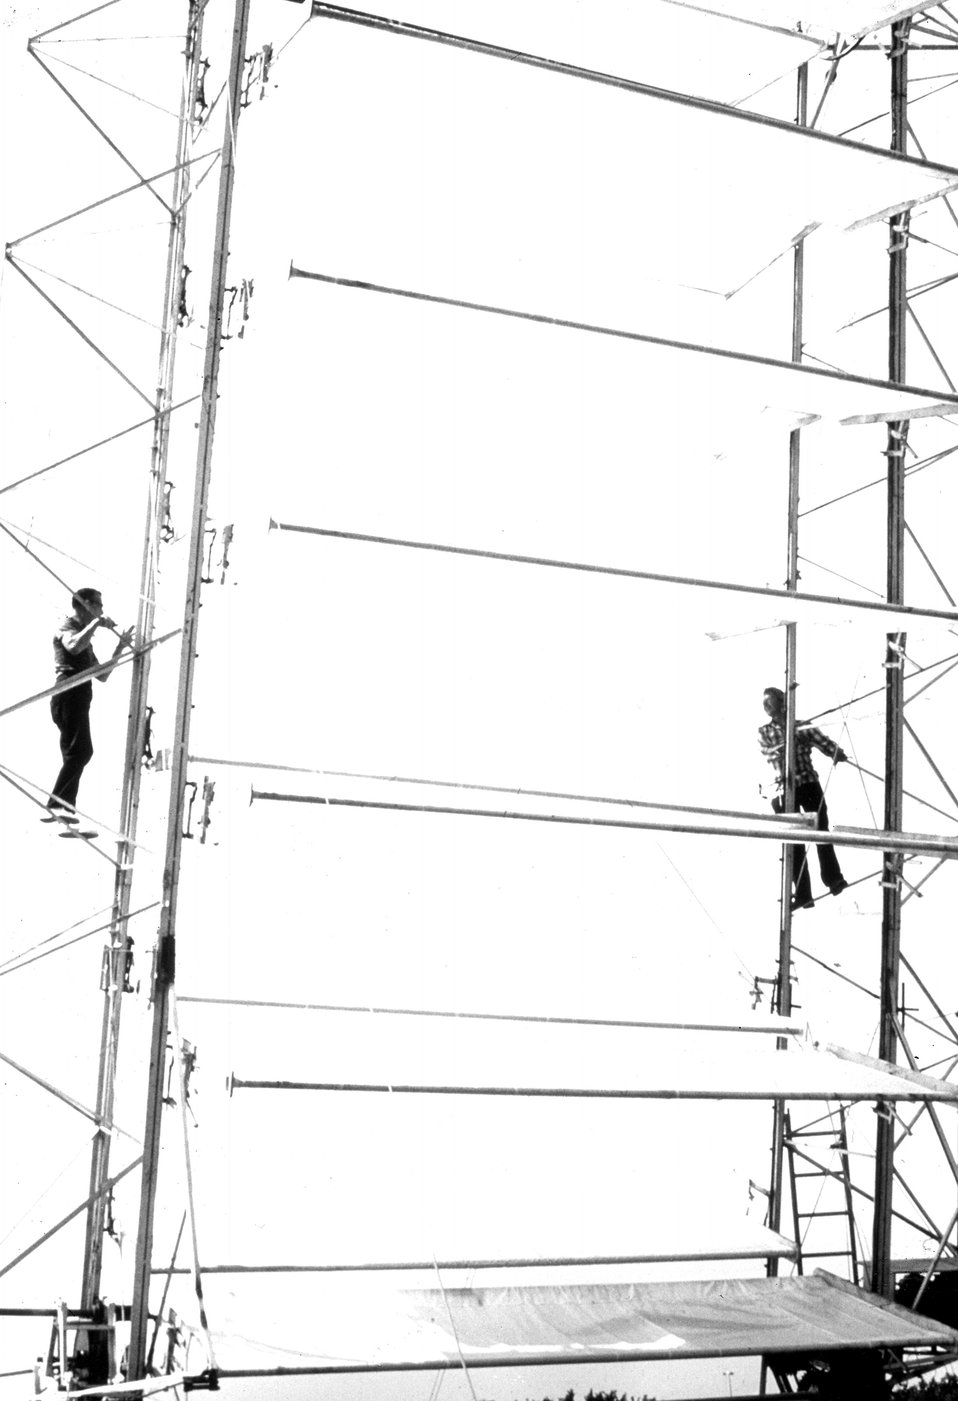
Wind energy machine, invented by Daniel Schneider of Irving, Texas, is being developed under a grant from the Department of Energy's (DOE) Energy-Related Inventions program. c. 1978